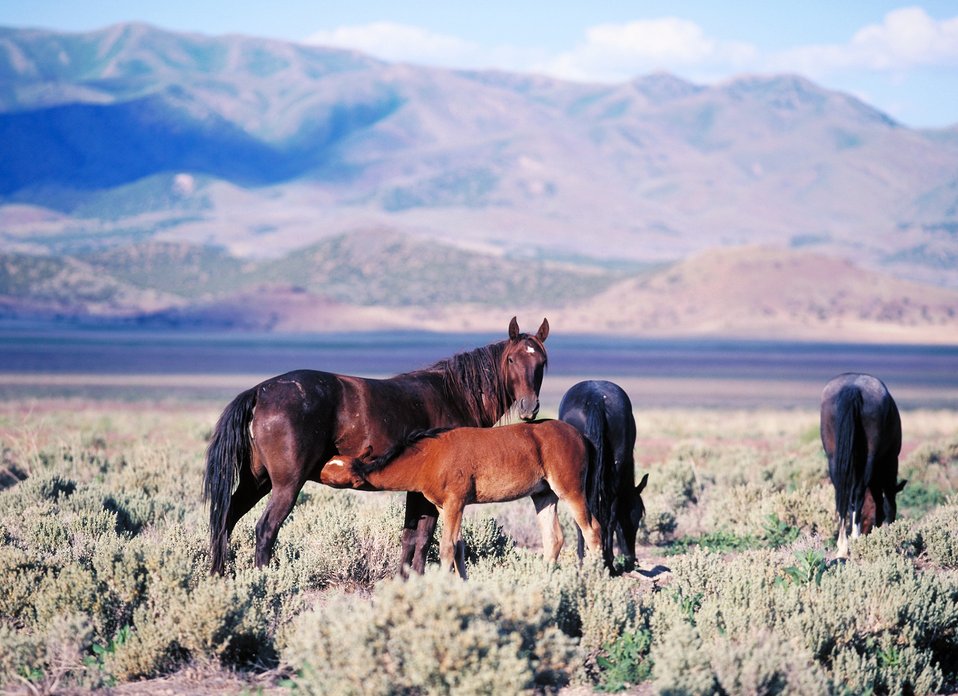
Onaqui Herd near Dugway, Utah.